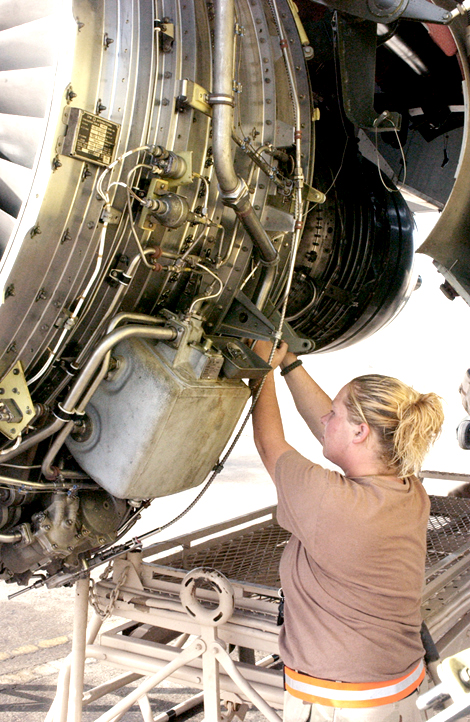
Two deployed KC-135s get rare engine swaps

SOUTHWEST ASIA -- Senior Airman Abby Hernandez reconnects components of a KC-135 Stratotanker engine that was just installed. KC-135 engines are very reliable and rarely have to be swapped. But Airmen at a forward-deployed location recently had to replace an engine on two KC-135s in the span of about a week. Airman Hernandez is deployed with the 380th Expeditionary Aircraft Maintenance Squadron.